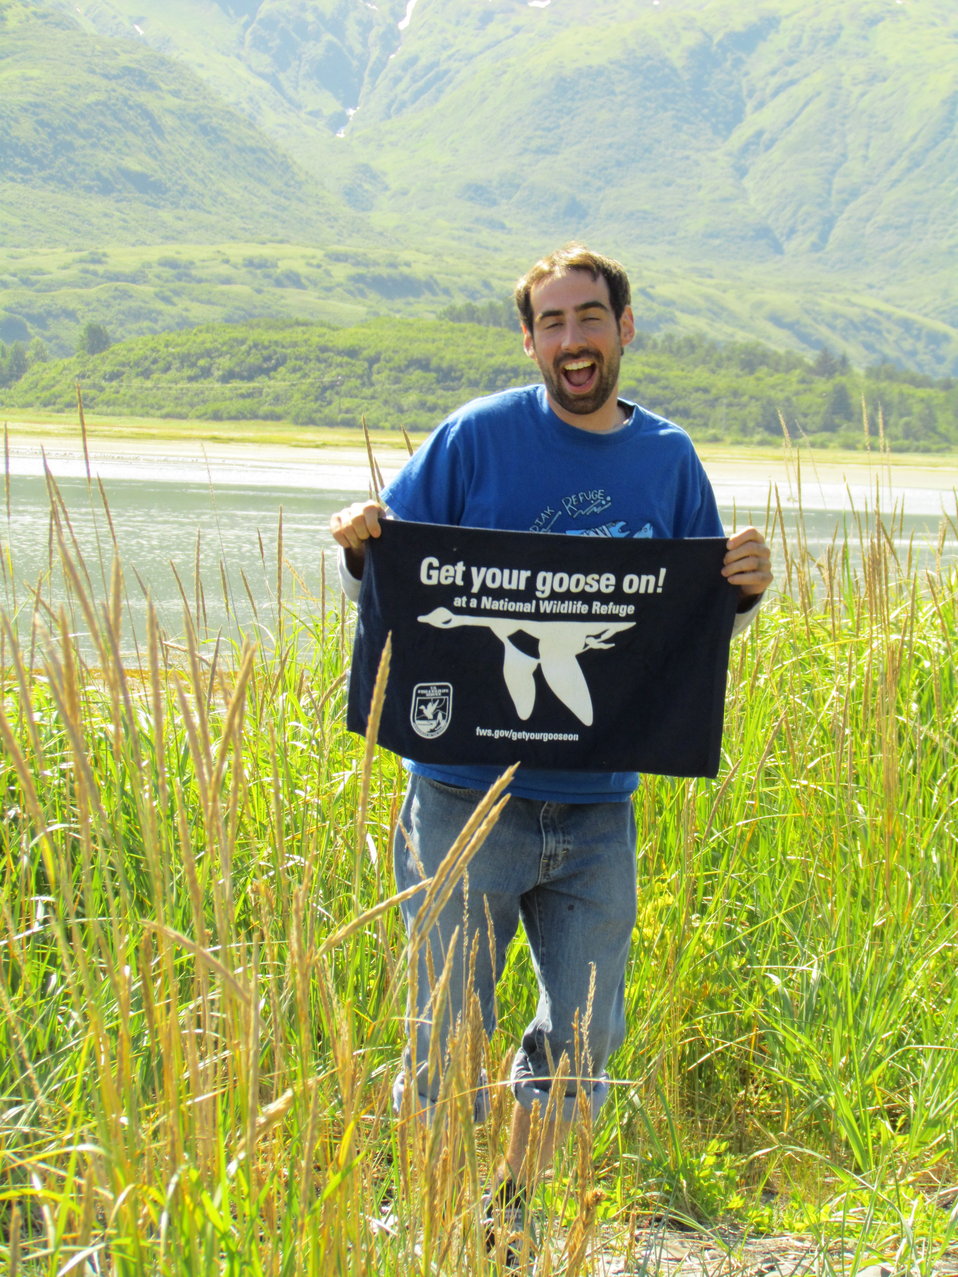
Get Your Goose On! - Alaska Style

Student Conservation Association intern, Rory Psotka

Credit: Shelly Lawson / USFWS

The Kodiak National Wildlife Refuge is a United States National Wildlife Refuge in the Kodiak Archipelago in southwestern Alaska, United States.

The Kodiak National Wildlife Refuge includes the southwestern two-thirds of Kodiak Island, Uganik Island, the Red Peaks area of Afognak Island and all of Ban Island in the archipelago. It encompasses 1,990,418 acres (8,054.94 km2).[2] The refuge is administered from offices in Kodiak.

The refuge contains seven major rivers and about 100 streams. It is a spawning ground for all six species of Pacific Ocean salmon, trout and several other fish species, as well as a nesting ground for 250 species of bird, many of which feed on salmon. The refuge has only six native species of mammals: Kodiak brown bear, red fox, river otter, ermine, little brown bat and tundra vole. The non-native mammals Sitka deer, mountain goat, Roosevelt elk, snowshoe hare and beaver were introduced to the archipelago between the 1920s and 1950s and are now hunted and trapped.

The climate of the refuge is that of southern Alaska, mild and rainy. Many areas in the refuge are densely forested with Sitka Spruce at lower elevations. There are grasslands in drier areas and at higher elevations. The refuge contains several small glaciers.